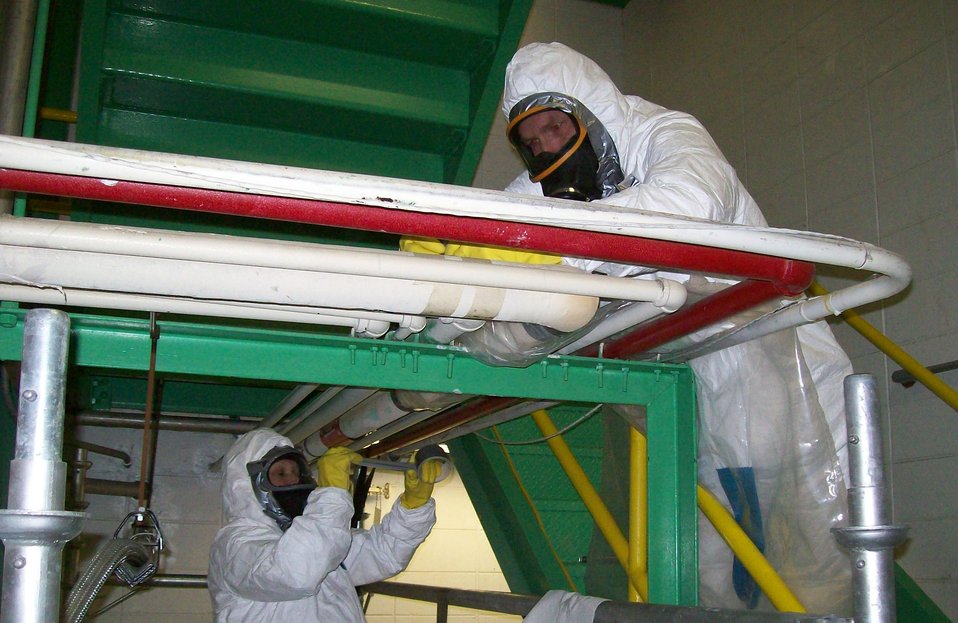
Workers Complete Asbestos Removal at West Valley to Prepare Facility for Demolition

Recovery Act workers remove material containing asbestos from the Main Plant Process Building at the West Valley Demonstration Project to prepare the facility for demolition.